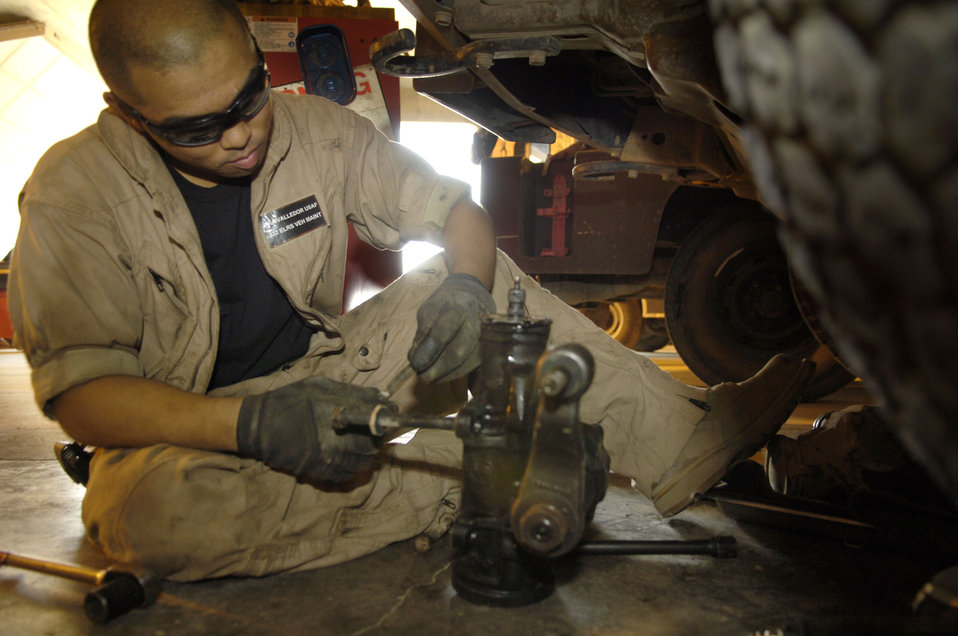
Vehicle maintenance

Senior Airman Jason Valledor performs maintenance on a vehicle at Balad Air Base, Iraq, on July 21. Airman Valledor is a vehicle mechanic assigned to the 332nd Expeditionary Logistics Readiness Squadron and is deployed from Ramstein AB, Germany.